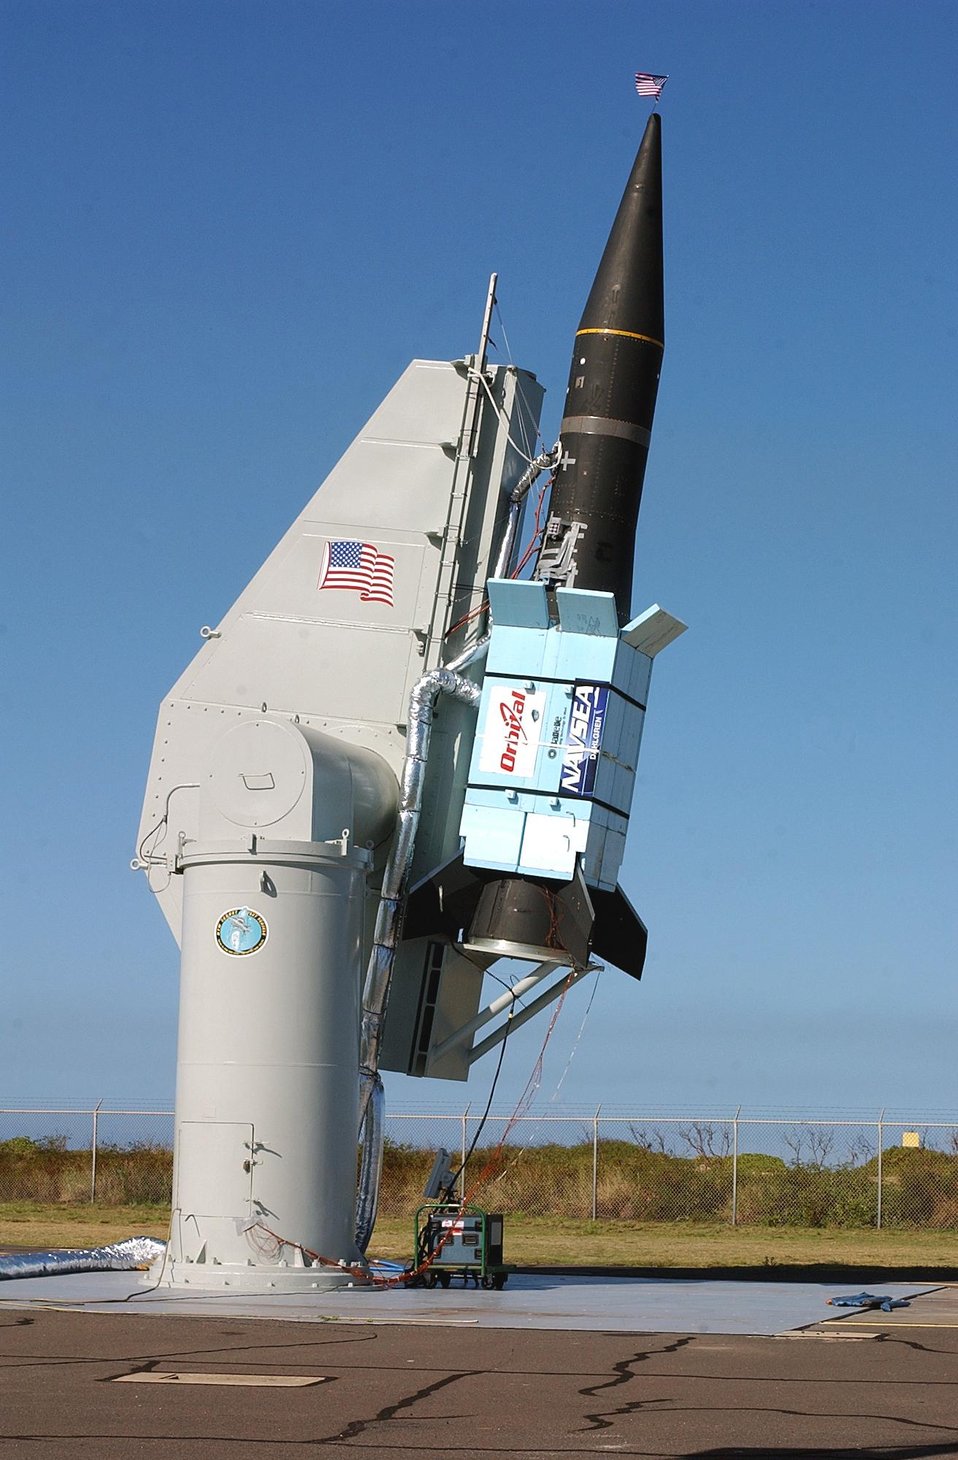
FM-5 TARGET ROCKET ON PAD 1'S LAUNCHER READY FOR LIFT OFF.

FM-5 IS A MISSILE DEFENSE ROCK BEING PREPARED FOR LAUNCH. SANDIA'S KAUAI TEST FACILITY, OPERATED FOR DOE, IS ON THE U.S. NAVY'S PACIFIC MISSILE RANGE FACILITY ON THE ISLAND OF KAUAI, HAWAII. SINCE 1962 SANDIA HAS SENT SCIENTISTS AND TECHNICIANS TO CONDUCT ROCKET FLIGHT TEST EXPERIMENTS RANGING FROM OFFENSIVE AND DEFENSIVE WEAPONS TESTING TO ATMOSPHERIC STUDIES AND HIGH TECH STAR GAZING.